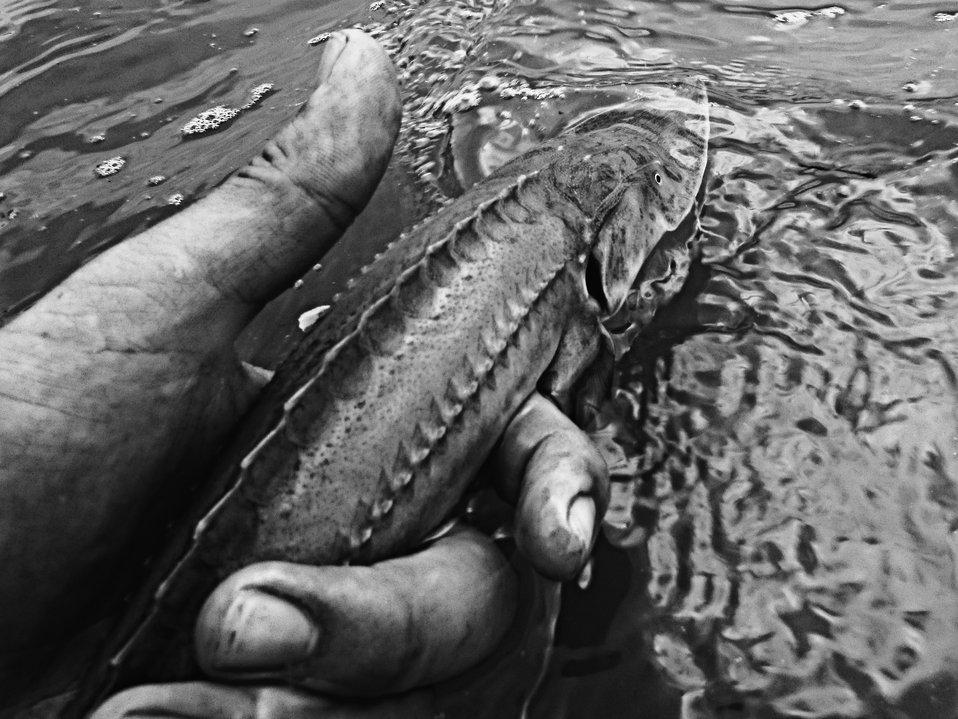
The Release

Our year-old pallid sturgeon have been in the wild for over a month now. In mid September we released about 100 of the endangered species into the Missouri River.

Here is one of the palm-sized sturgeon before being sent off near Springfield, SD.